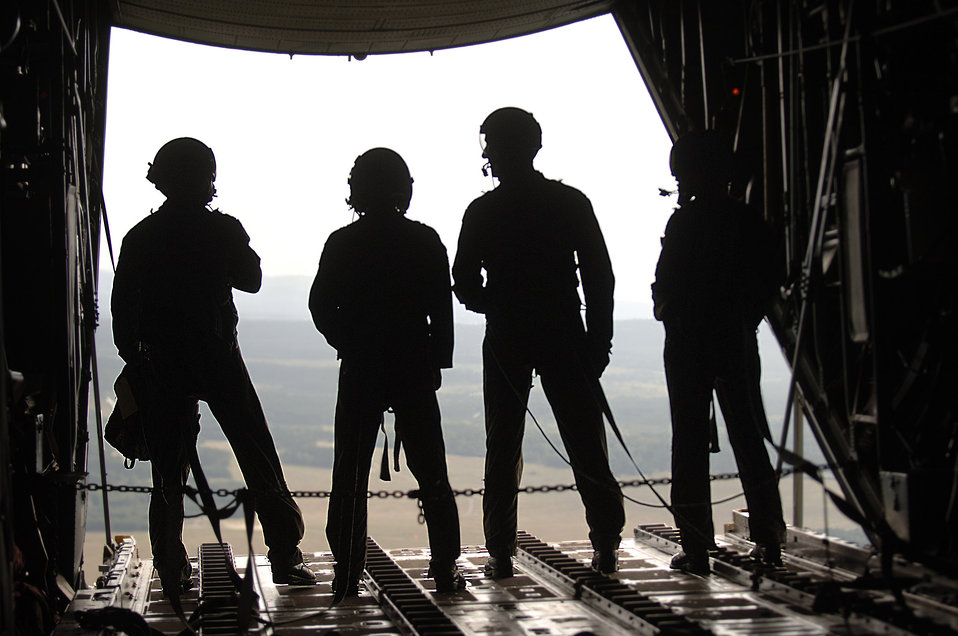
Operation Air Force puts cadets in the air over Europe

Moments after airdropping cargo over eastern Germany, C-130 loadmasters, Staff Sgt. Dan Insurriaga and Senior Airman Matthew Merkely, (center) invite Air Force Academy Cadet 1st Class Matt Sparta (far left) and Cadet 2nd Class Erin Keane to view the drop zone from the end of the cargo ramp.